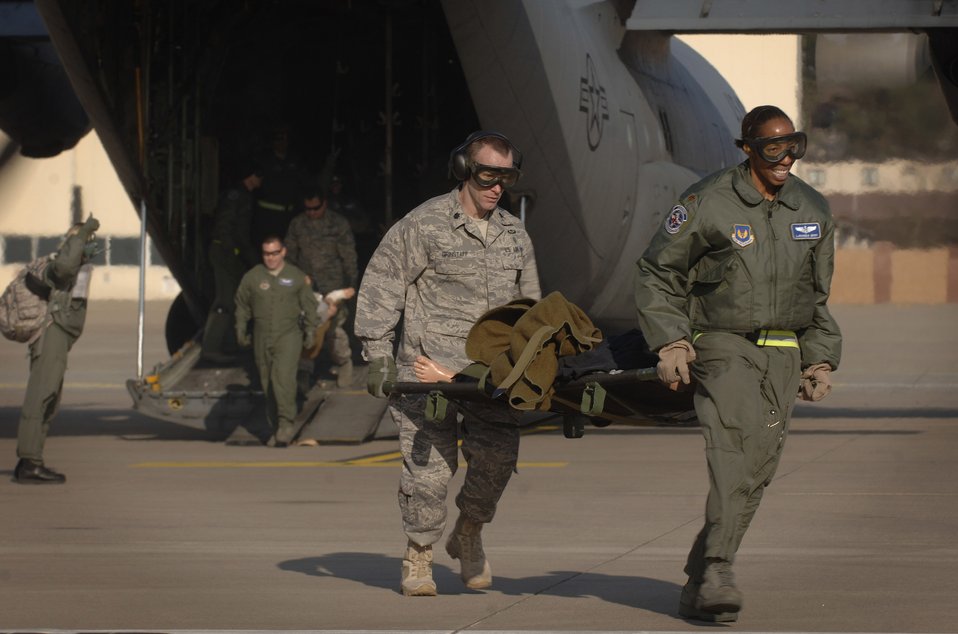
Medical professionals hone patient care skills

Maj. LaRhonda Gray and Colonel Grinstaff assist in an engines-running off load of 1,500 pounds of medical equipment and training mannequins following a three-hour aeromedical evacuation training sortie Feb. 19 at Ramstein Air Base, Germany. Major Gray and Colonel Grinstaff are flight nurses.